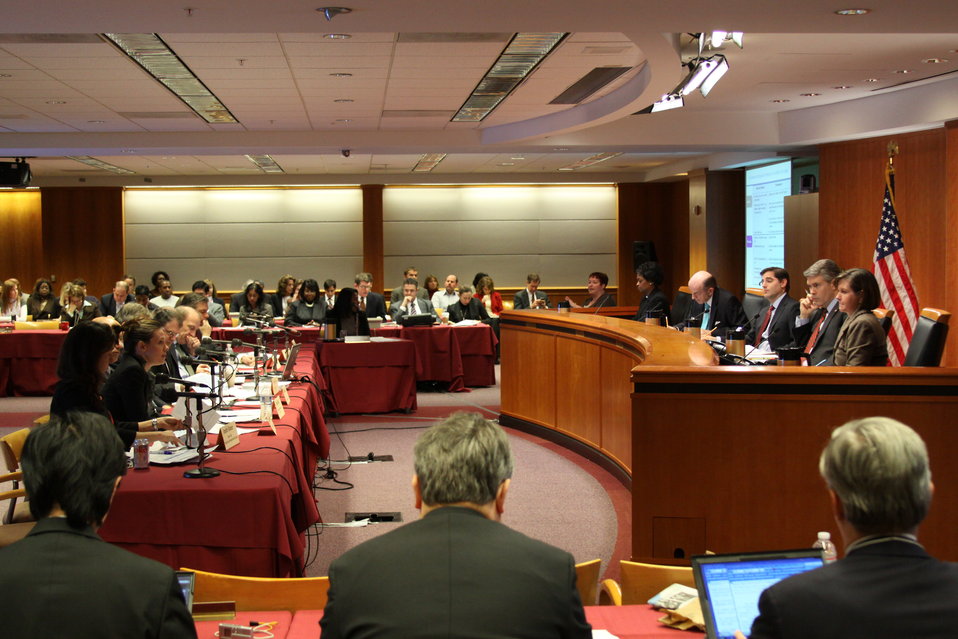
December Commission Meeting